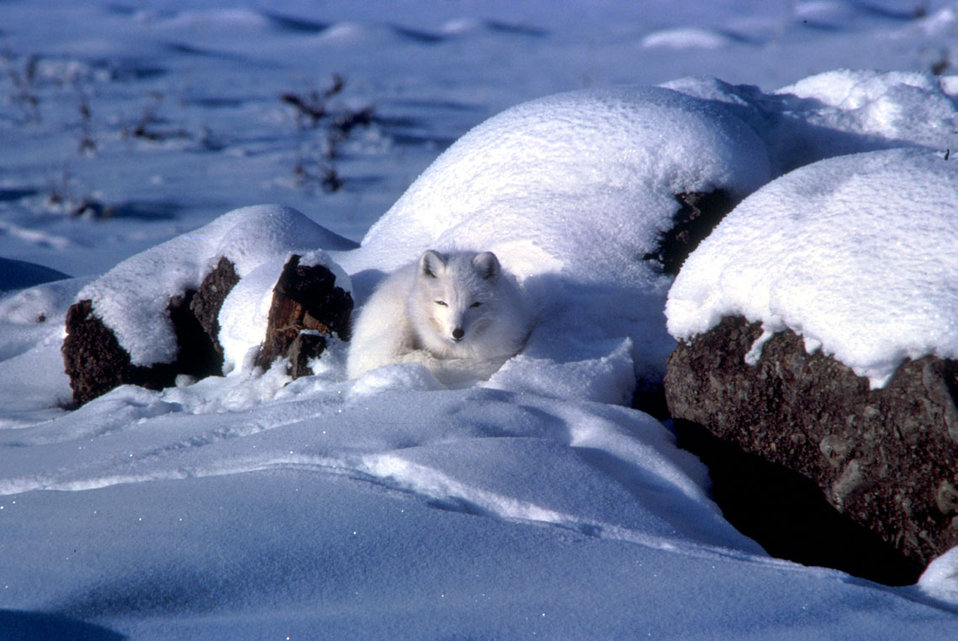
Arctic fox in snow

Arctic fox curled up in snow in Alaska in winter.